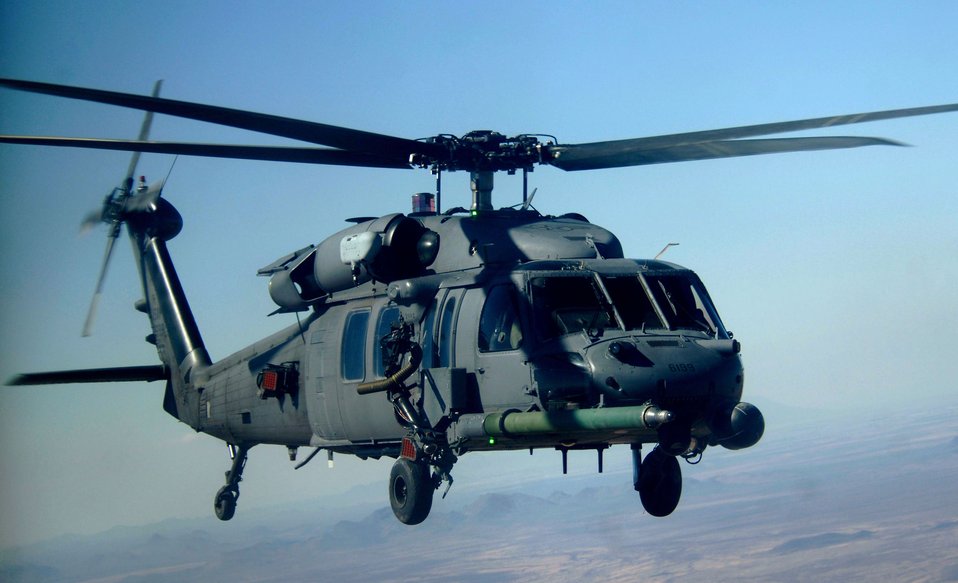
Insertion/extraction training

A HH-60 Pavehawk carrying pararescuemen from the 48th Rescue Squadron, flies over a local training area near Davis-Monthan Air Force Base, Ariz., Monday, March 13, 2006. The 55th Rescue Squadron and pararescuemen assigned to the 48th Rescue Squadron, were conducting alternate insertion/extraction training.